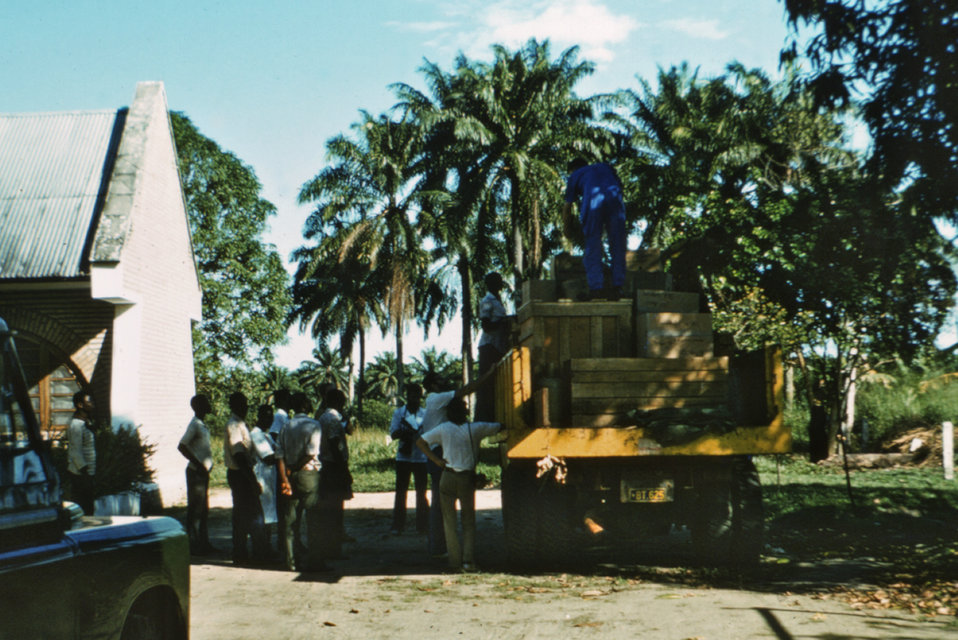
This 1976 photograph shows individuals unloading a truck load of International Medical Commission (IMC) supplies, which had been shipped from Bumba, Zaire to Yambuku, Zaire.